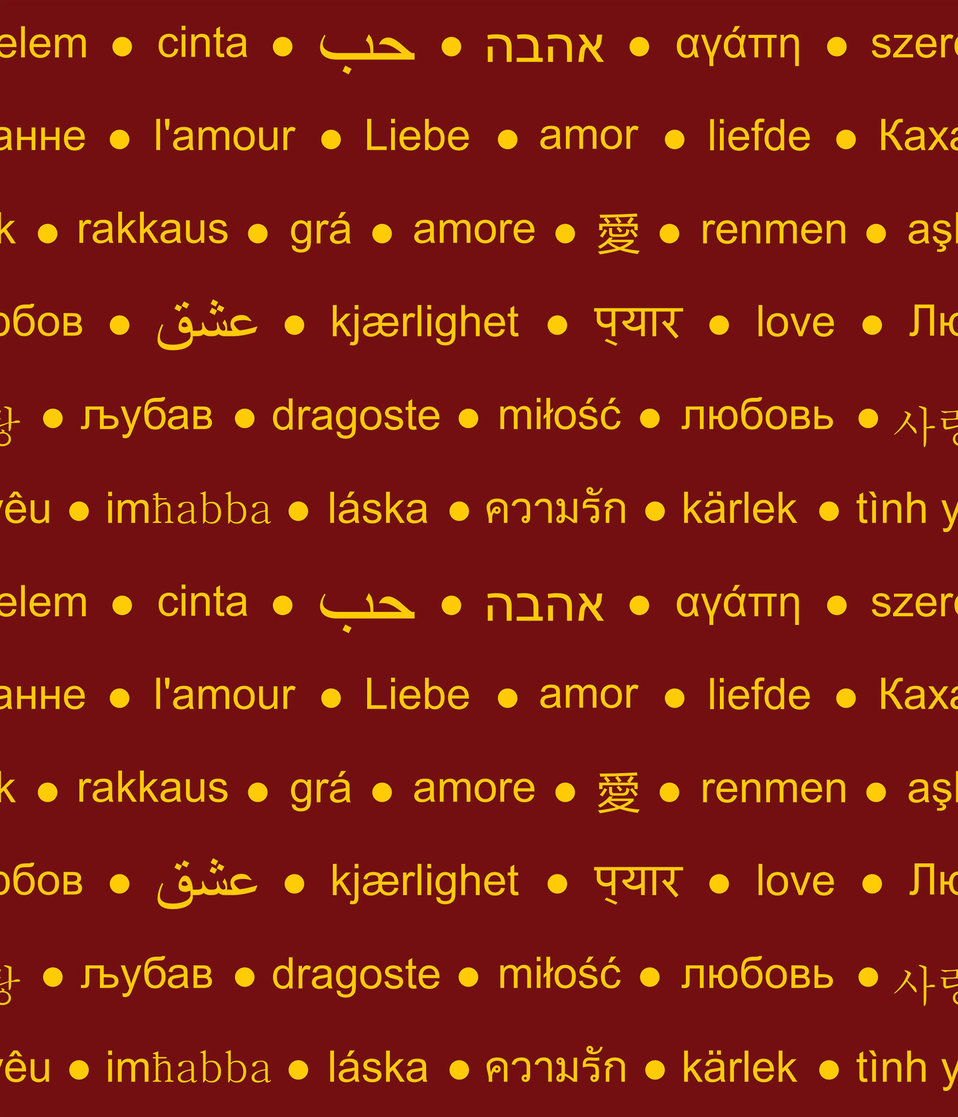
Love

A seamless words pattern..